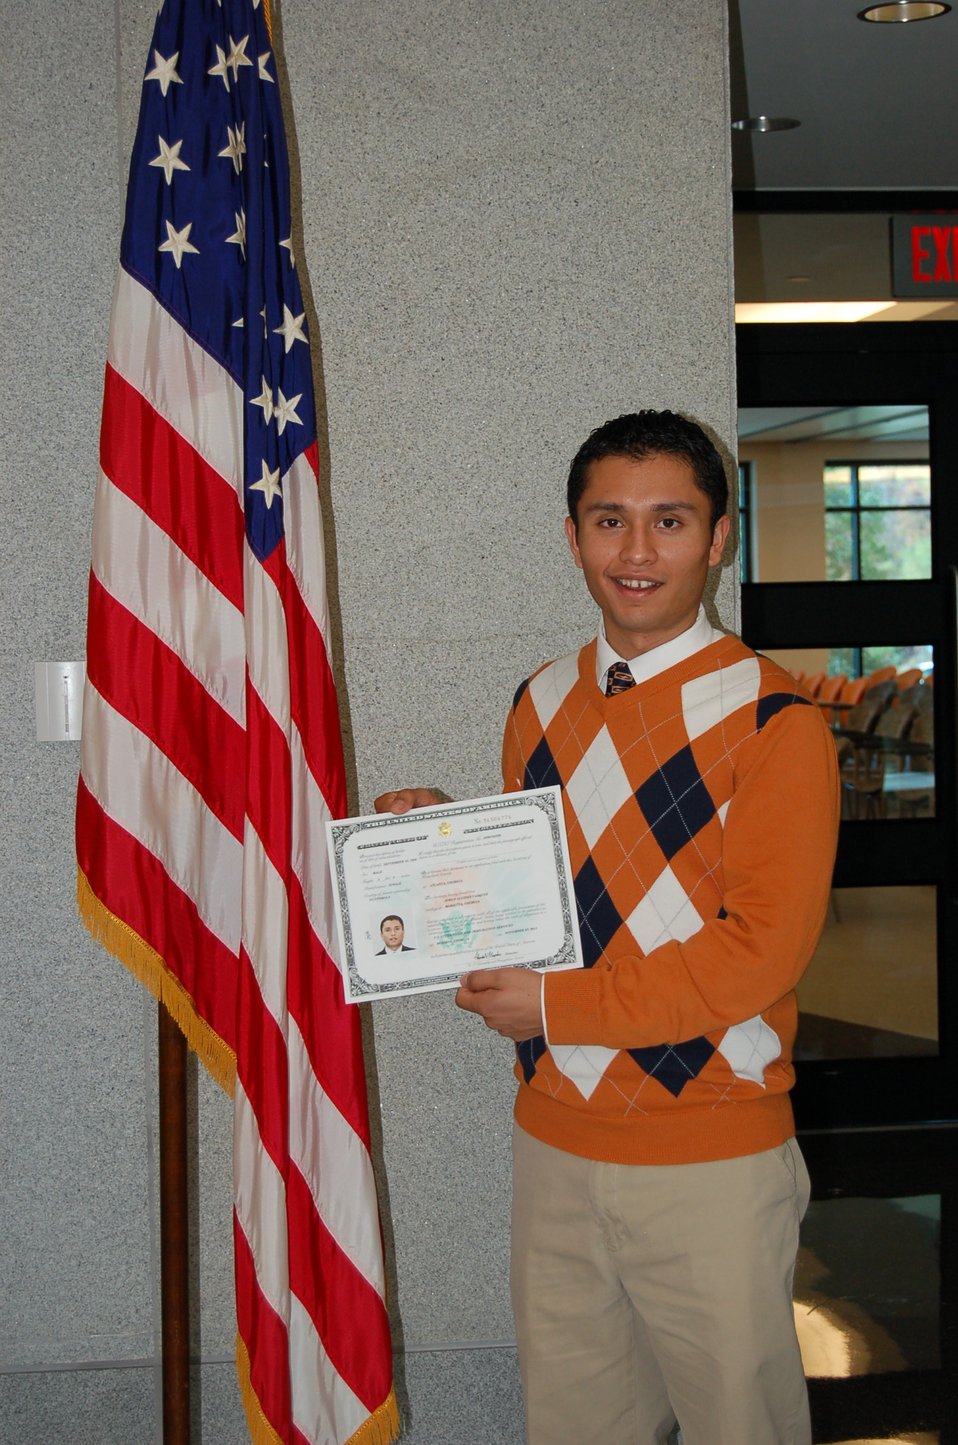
New Citizens